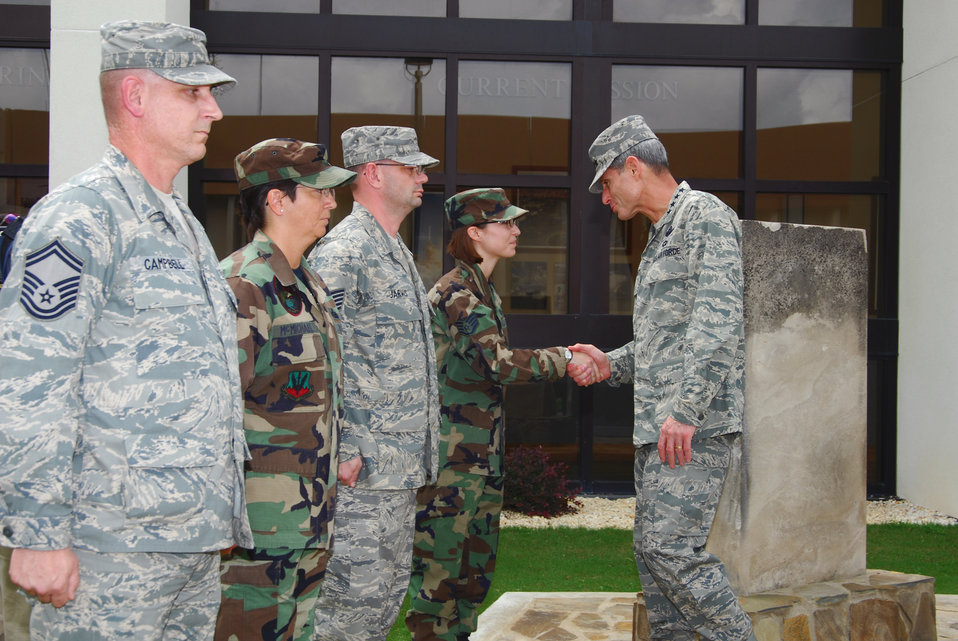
CSAF visits Tyndall AFB, Fla.

Air Force Chief of Staff Gen. Norton A. Schwartz greets Airmen assigned to the 601st Air Operations Center during his visit to Tyndall Air Force Base, Fla., Sept. 3.